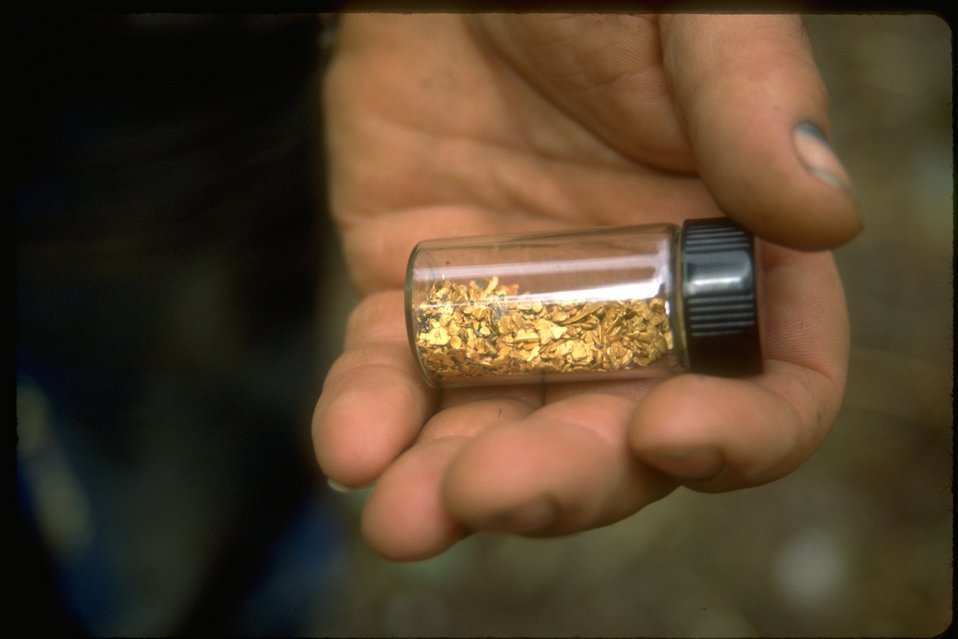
Gold from a BLM mining claim.